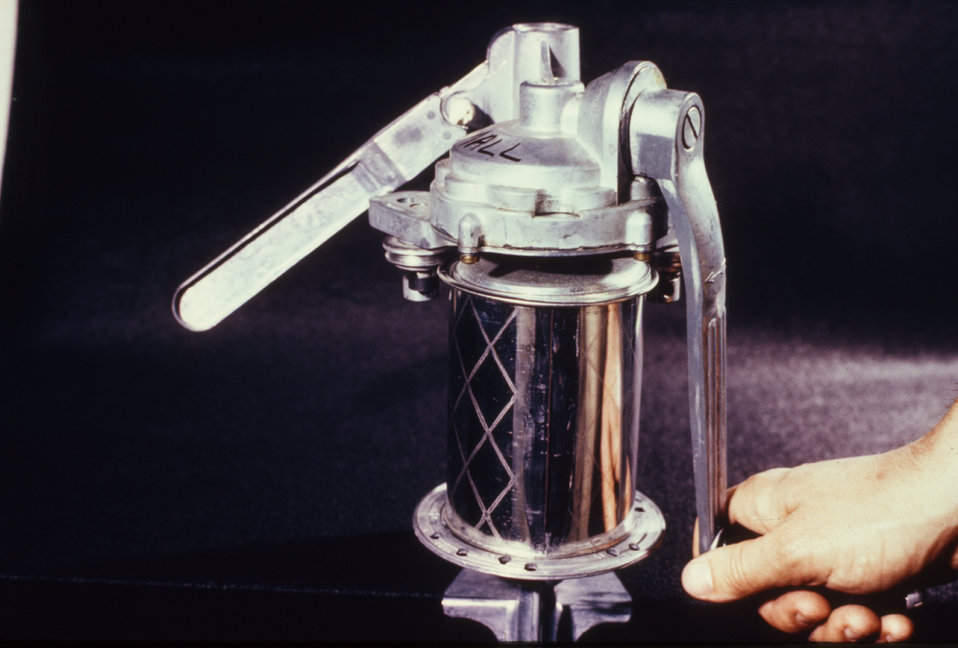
This CDC clinician is sealing collected virus specimens within a tin can for shipping to a research facility.